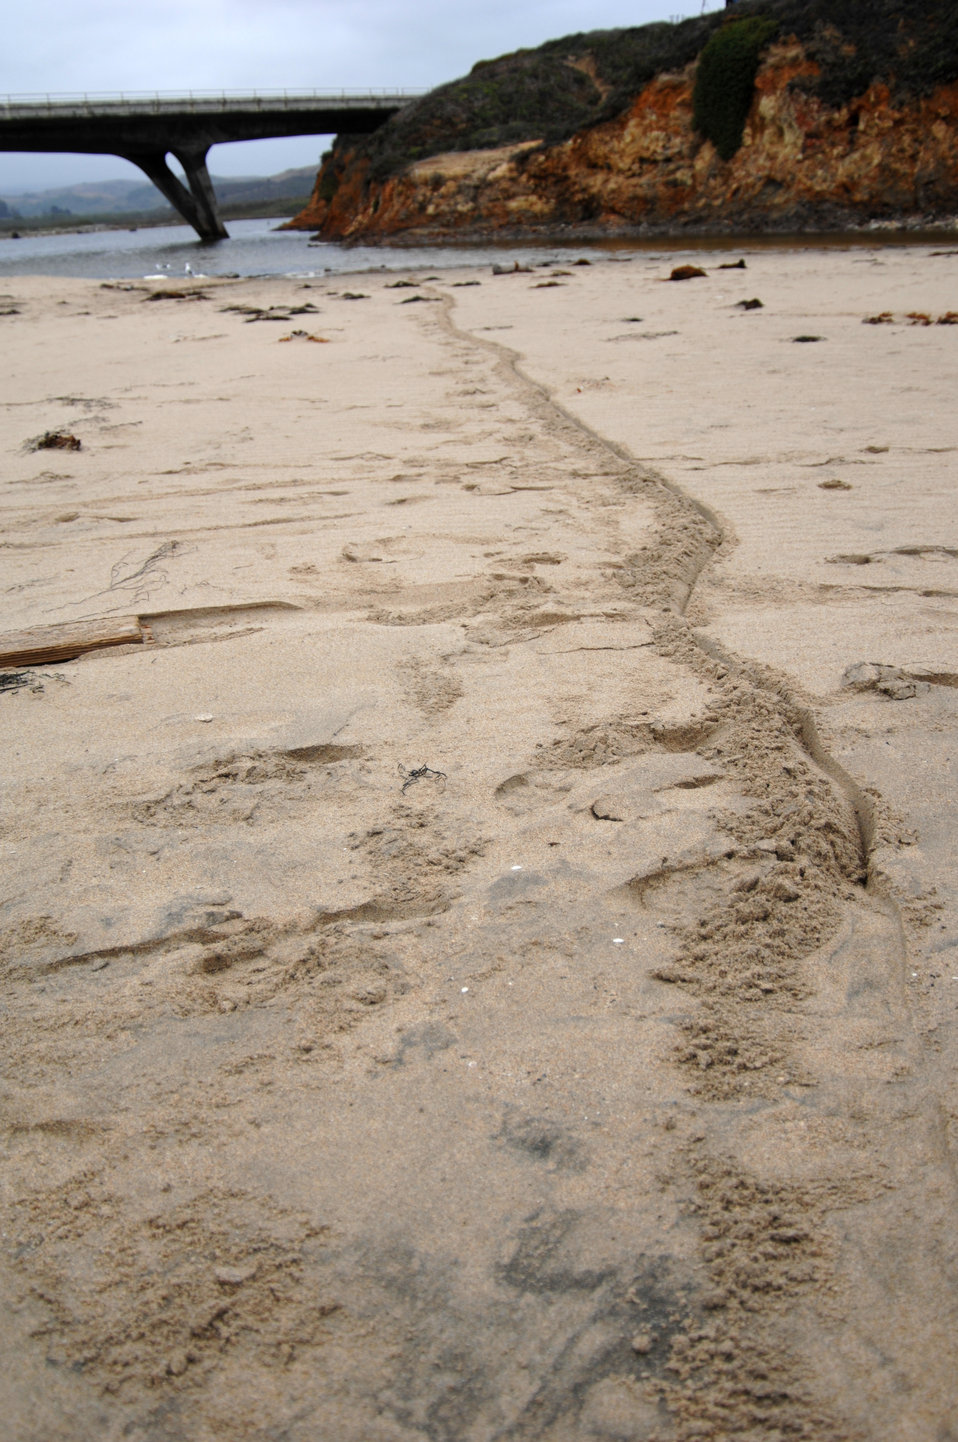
Pescadero Breach 1

Drawing a line in the sand, the partners plot the best course for breaching Pescadero Lagoon in an effort to avoid another fish kill this year.